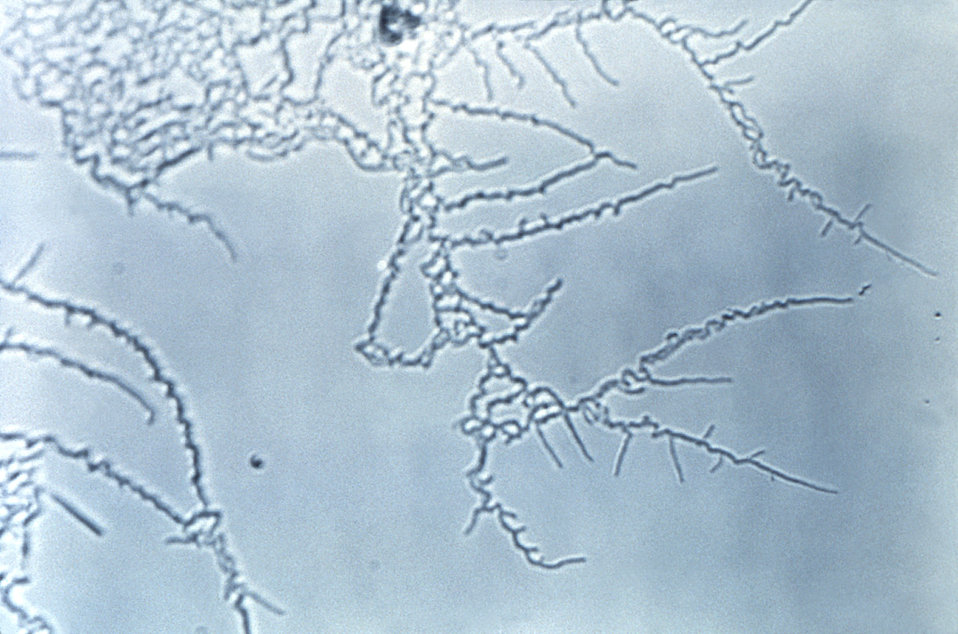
Magnified 400X, this is a photomicrograph revealed the presence of Gram-positive Mycobacterium fortuitum bacteria from an isolate grown on tap water agar.